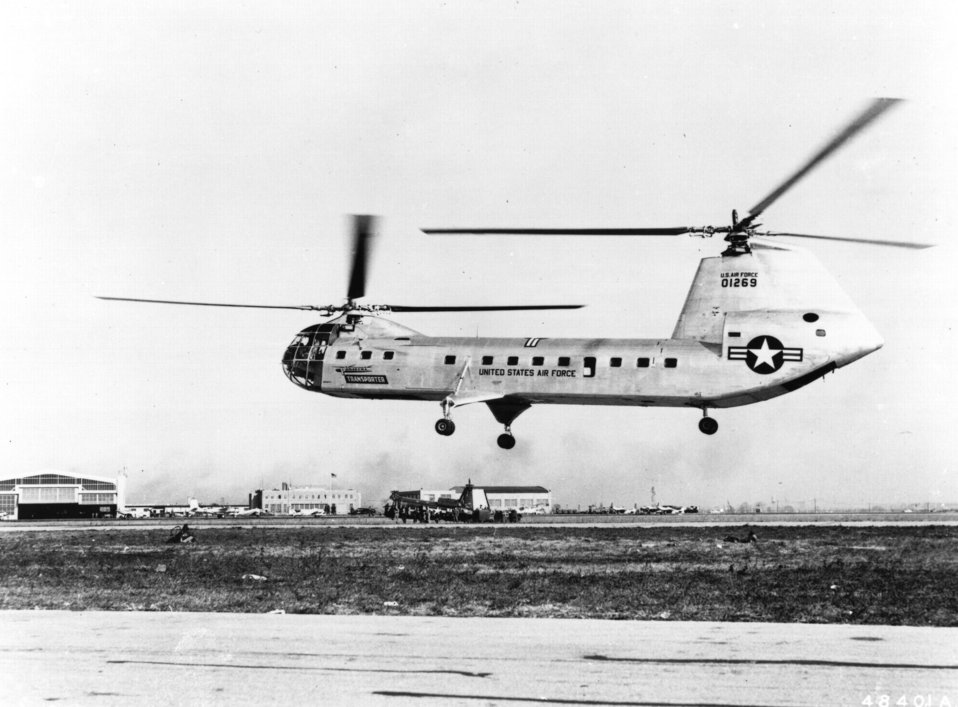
H-16